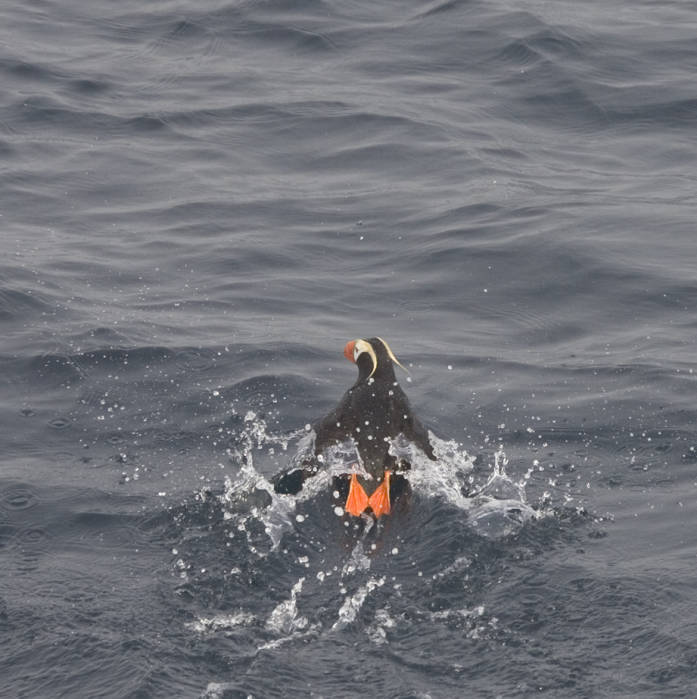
tufted puffin

Alaska Maritime National Wildllife Refuge, AK